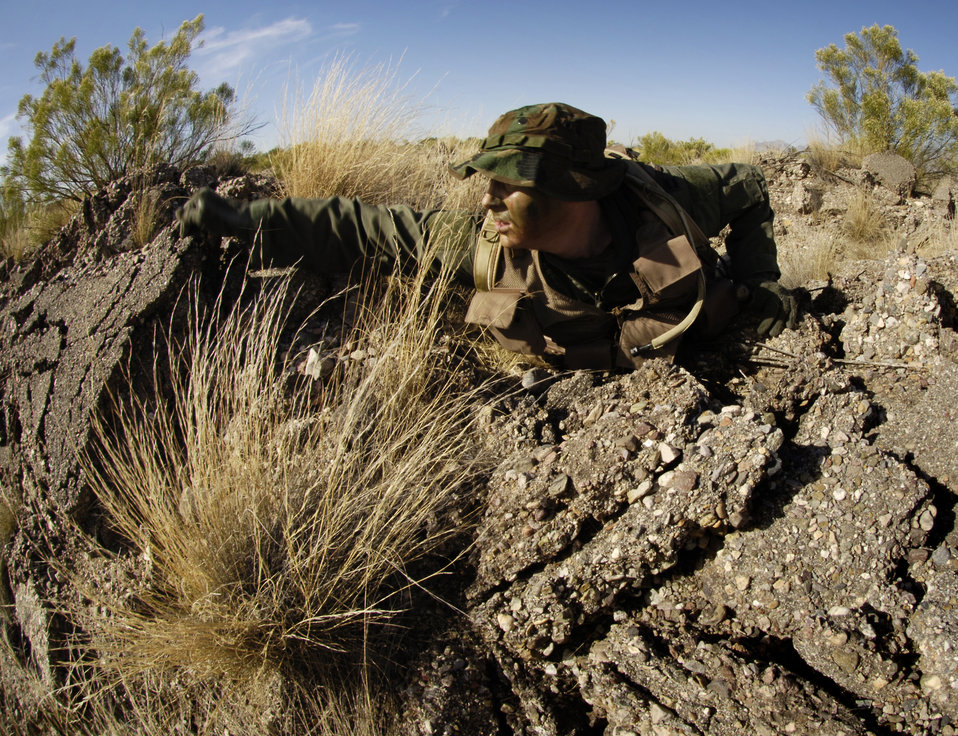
Taking cover

DAVIS-MONTHAN AIR FORCE BASE, Ariz. (AFPN) -- Capt. Chris Occhinzzo practices evasion maneuvers during combat survival training course. The evasion maneuvers are part of a survival evasion resistance and escape training taught to pilots and aircrew members. Captain Occhinzzo is an aircraft navigator from the 43rd Electronic Combat Squadron.